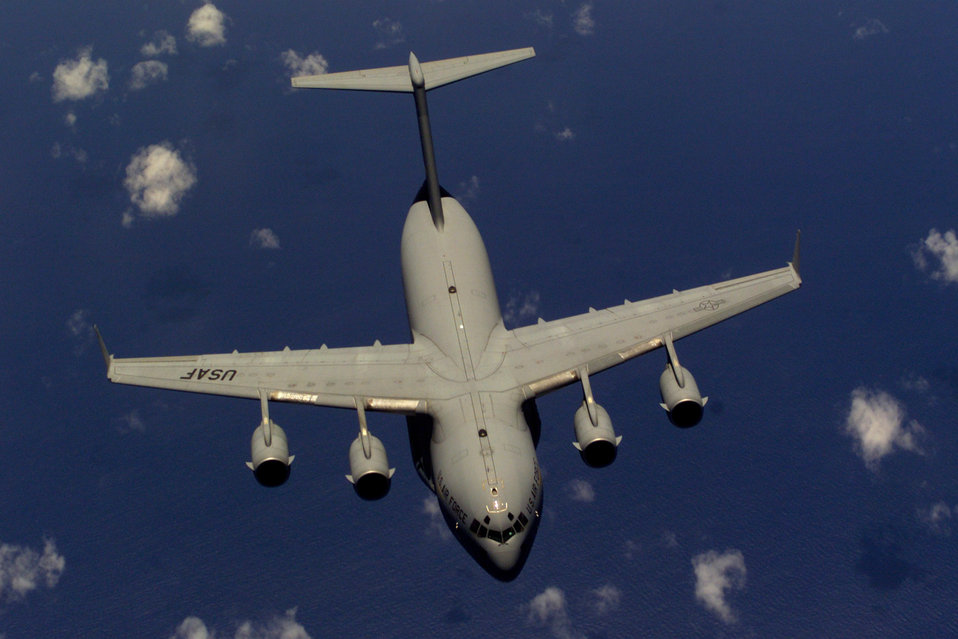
Blue skies

NORTH CAROLINA -- A C-17 Globemaster III from the 437th Air Wing, Charleston Air Force Base, S.C., flies away from a KC-10 Extender after being refueled off the coast of North Carolina. During Rodeo 2000, teams from all over the world will compete in areas including airdrop, aerial refueling, aircraft navigation, special tactics, short field landings, cargo loading, engine running on/offloads, aeromedical evacuations and security forces operations.